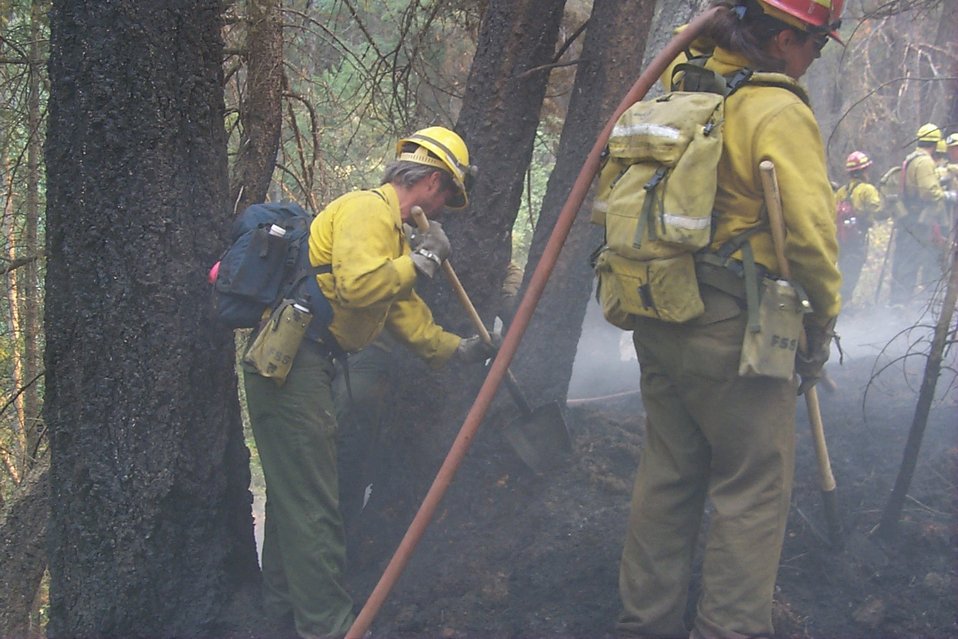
Line crew Fire Clearwater Fire Salmon Field Office USRD Upper Snake River District